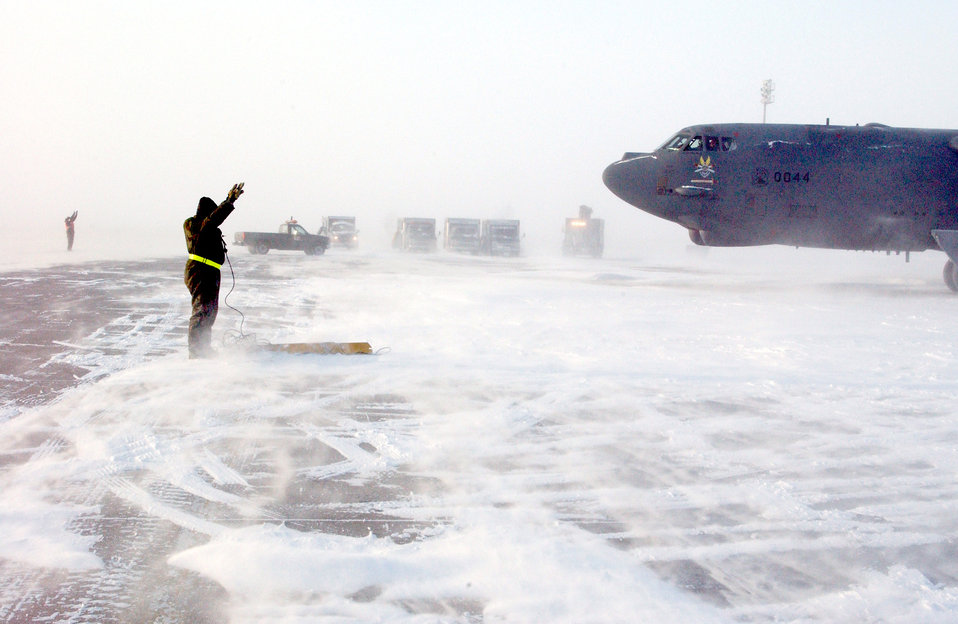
Cold-weather mission

MINOT AIR FORCE BASE, N.D. -- Staff Sgt. Scott West marshals a B-52H Stratofortress before takeoff here Jan. 27. The mission was flown despite weather conditions of minus 45 degrees with wind gusts of 27-plus mph. Sergeant West is a crew chief with the 5th Aircraft Maintenance Squadron.